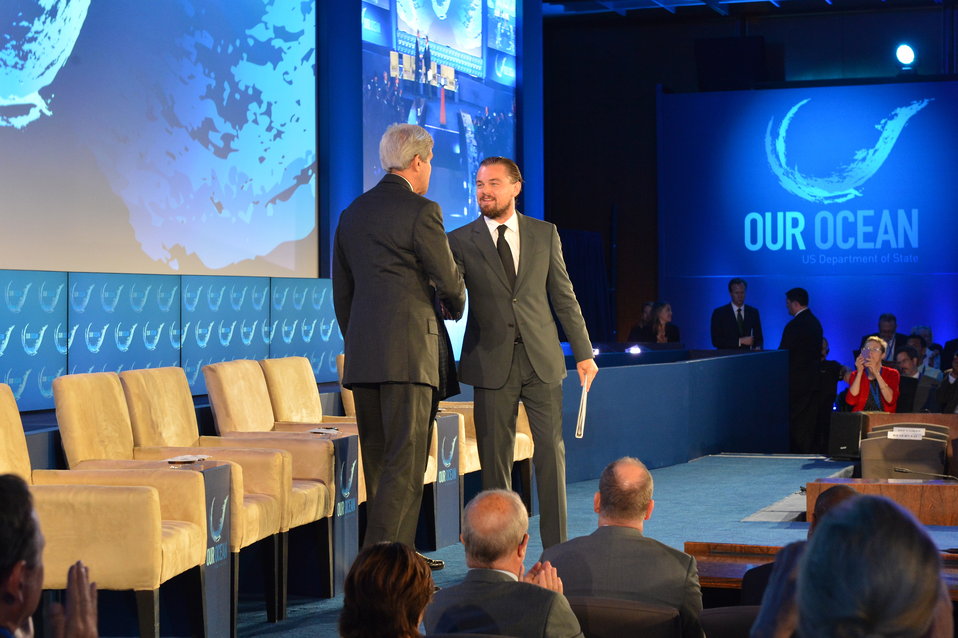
Leonardo DiCaprio Shakes Hands With Secretary Kerry Prior to Delivering Remarks at the 'Our Ocean' Conference

Leonardo DiCaprio Shakes Hands With U.S. Secretary of State John Kerry prior to delivering his remarks at the 'Our Ocean' Conference at the U.S. Department of State in Washington, D.C. on June 17, 2014.